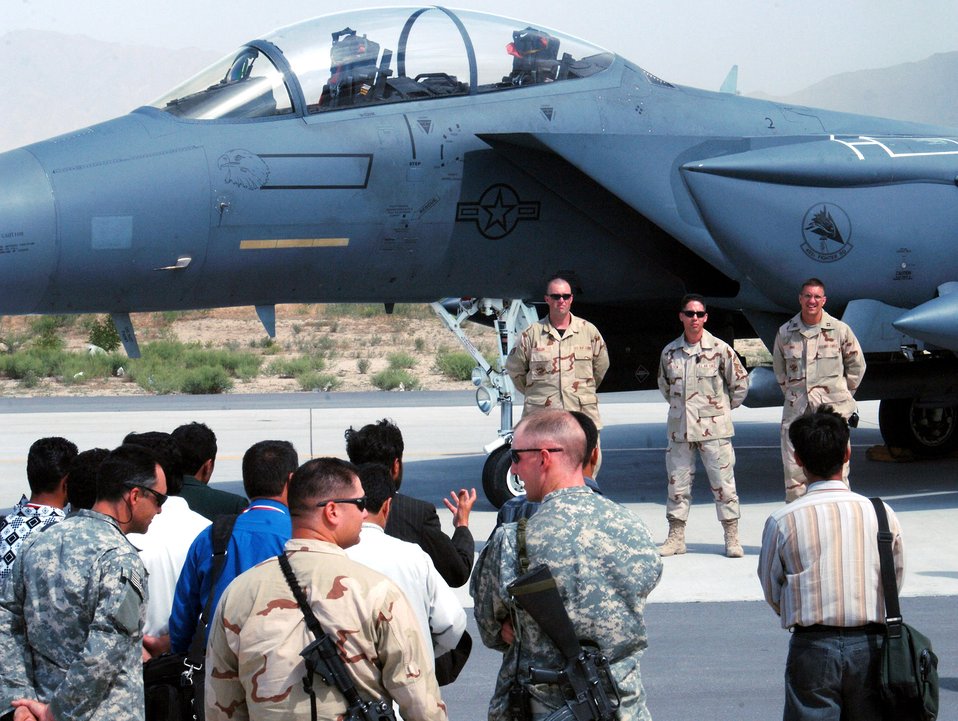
Afghan media get up-close view of Bagram Air Base

Staff Sgt. Kerry Pliler, Senior Master Sgt. John Felten and Capt. Rawley Mims answer questions of local Afghan media May 29 during a media day at Bagram Air Base, Afghanistan. The media day was aimed at informing the local reporters on the operations at Bagram AB and how the U.S. military is working alongside coalition partners to support and defend freedom in Afghanistan. The Airmen are assigned to the 455th Expeditionary Aircraft Maintenance Squadron.